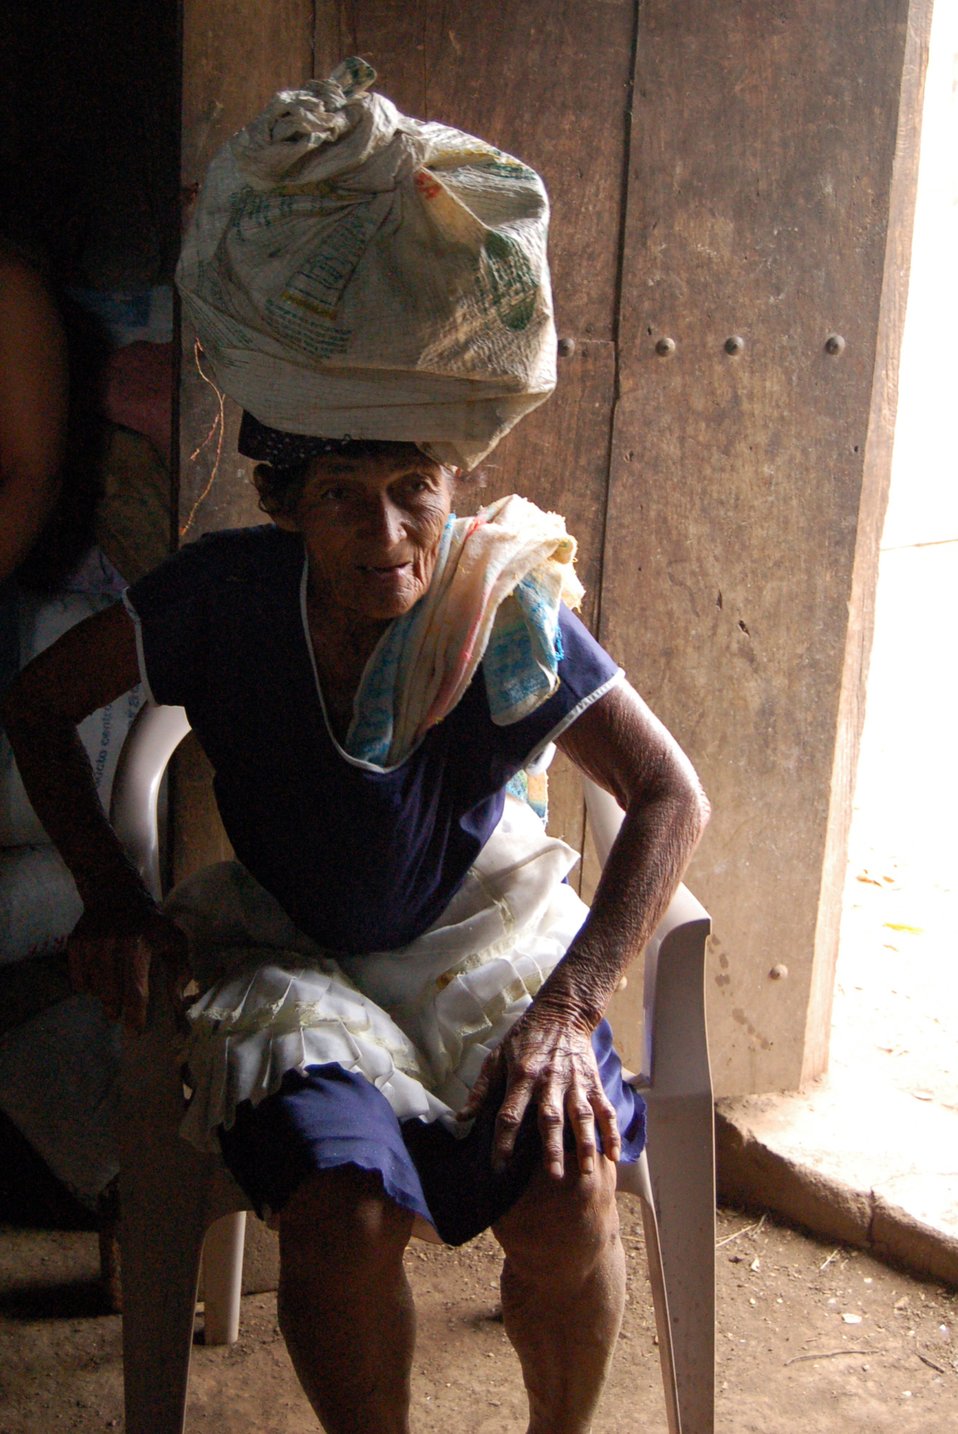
Nicaraguan lifestyle proves hard, offers valuable lessons

One of Luisa Palacio-Cortez's neighbors stops in for a rest after balancing a shopping load home for three miles from Santa Teresa.